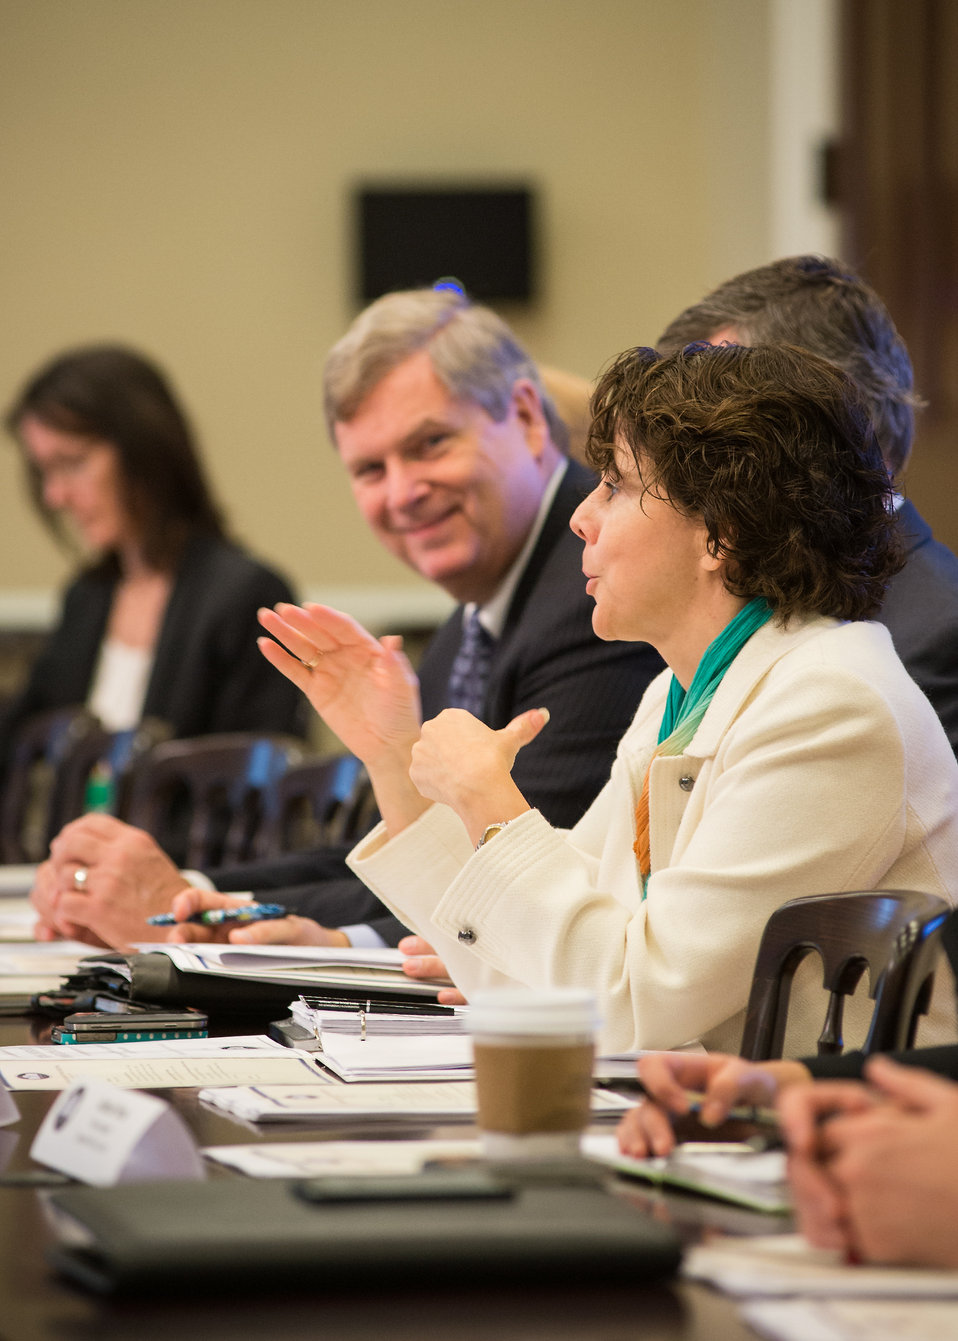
White House Domestic Policy Council Director Cecilia Munoz, Agriculture Secretary Tom Vilsack, and administration officials discuss the Farm Bill, Immigration Reform and White House Rural Council Investments and Policy actions at the Eisenhower Executive Office Building in Washington, D.C. on Thursday, Nov. 21, 2013.